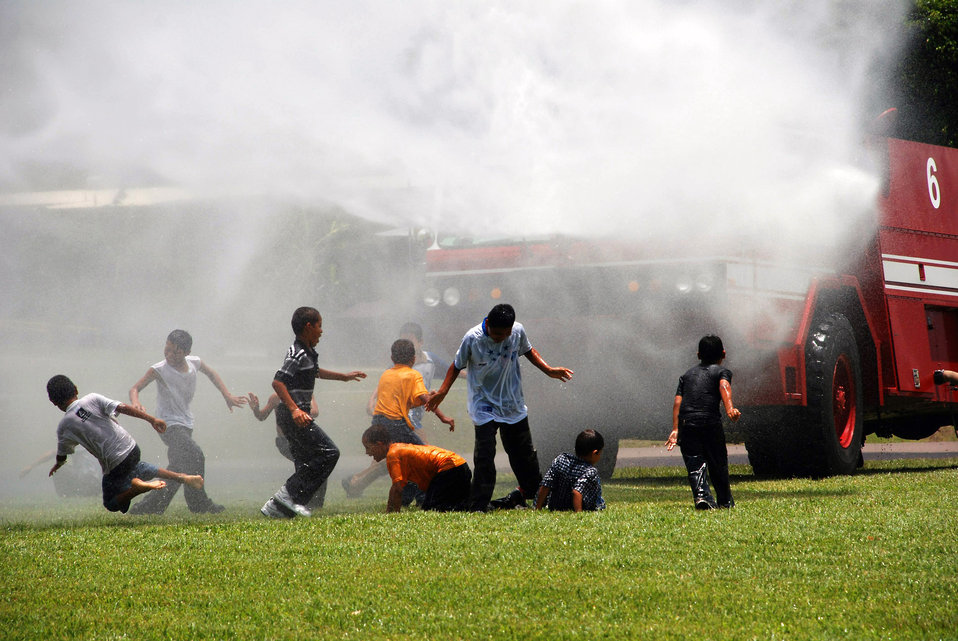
Orphanage kids have special day at Soto Cano

Boys from the Hogar de Ninos Nazareth Orphanage in Comayagua, Honduras, play in the water spray from a Joint Task Force-Bravo fire truck. More than 50 boys from the orphanage came to Soto Cano Air Base, Honduras, Aug. 2 for a day of fun and activities.